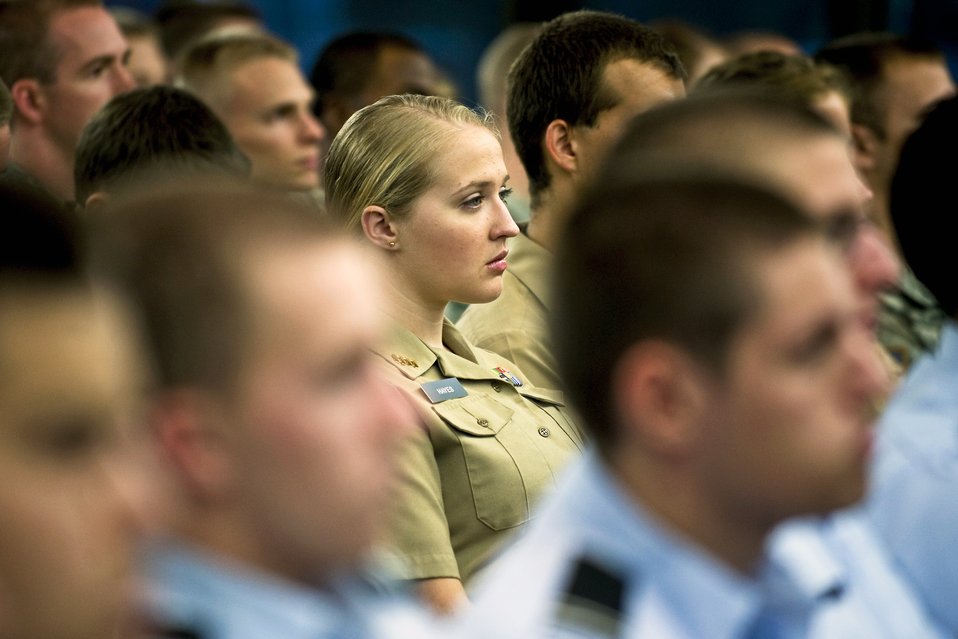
Secretary Gates predicts more women in special operations

ROTC cadets listen as Defense Secretary Robert M. Gates speaks Sept. 29, 2010, at Duke University in Durham, N.C.